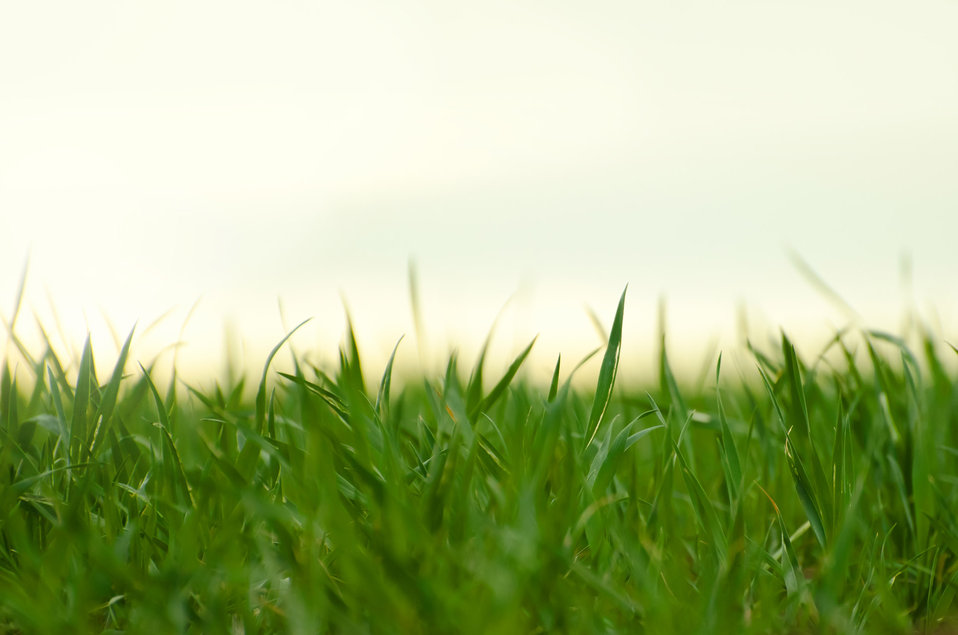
Grass - background.